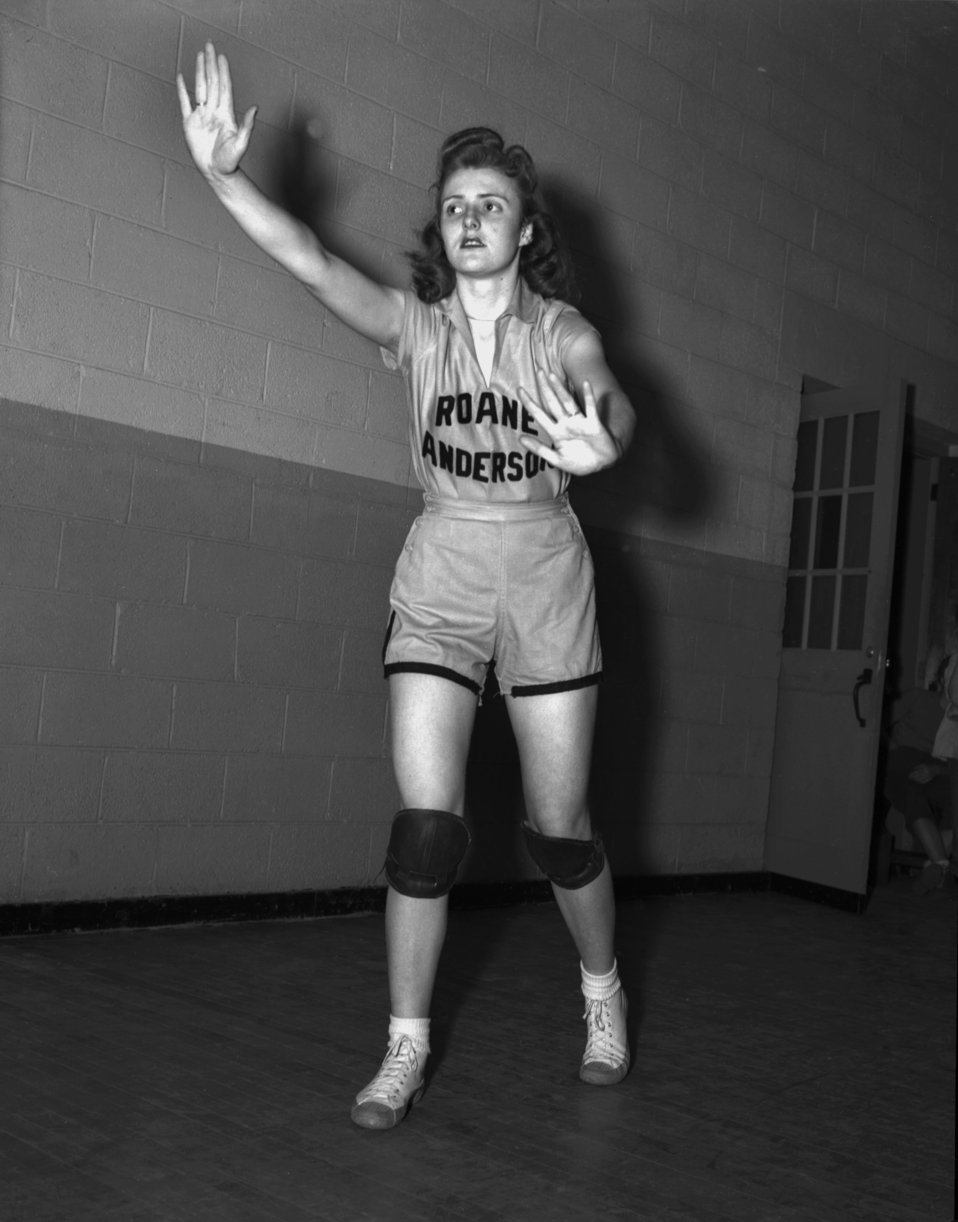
R. A. Basketball Oak Ridge

3271-4a DOE photo Ed Westcott 1-20-1947 Oak Ridge Tennessee